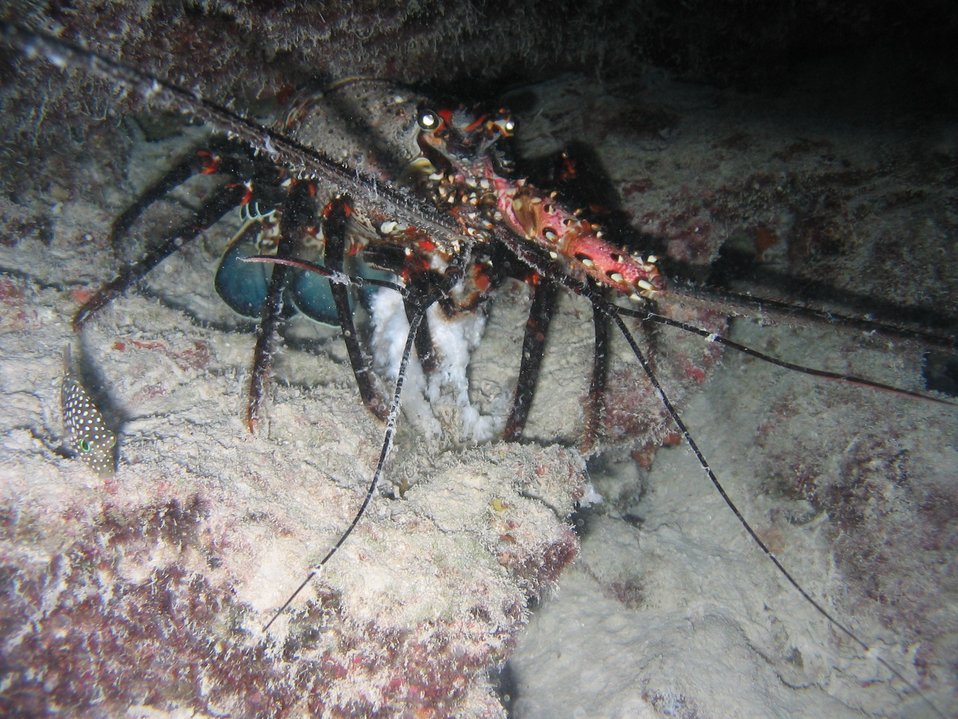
A spiny lobster (Panulirus sp.).